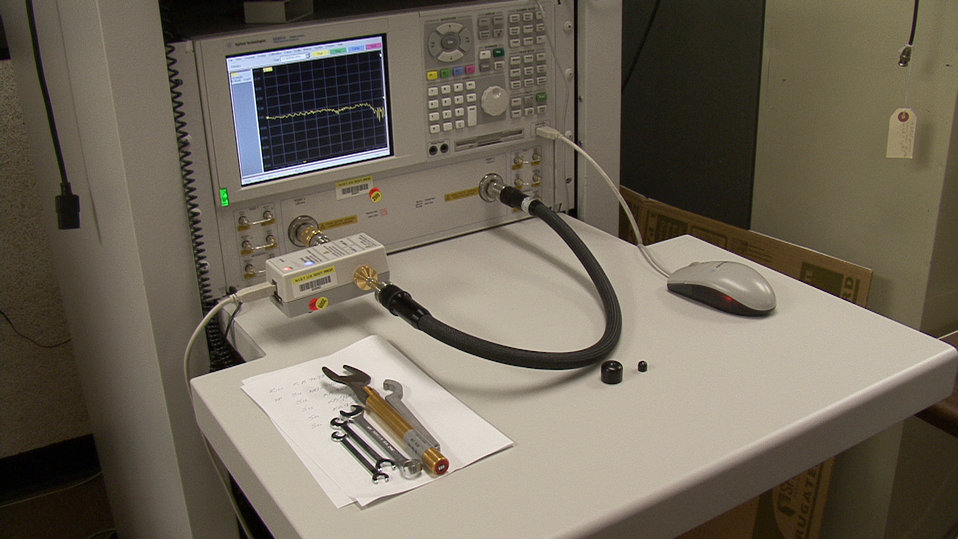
Network Analyzer Calibration

Verifying the performance of vector network analyzers-devices that check how components used in cell phones, radios and satellites transmit signals-has gotten a lot easier and faster with this plug-in device and accompanying software developed by NIST. A process that once took hours or days can now be done in minutes.